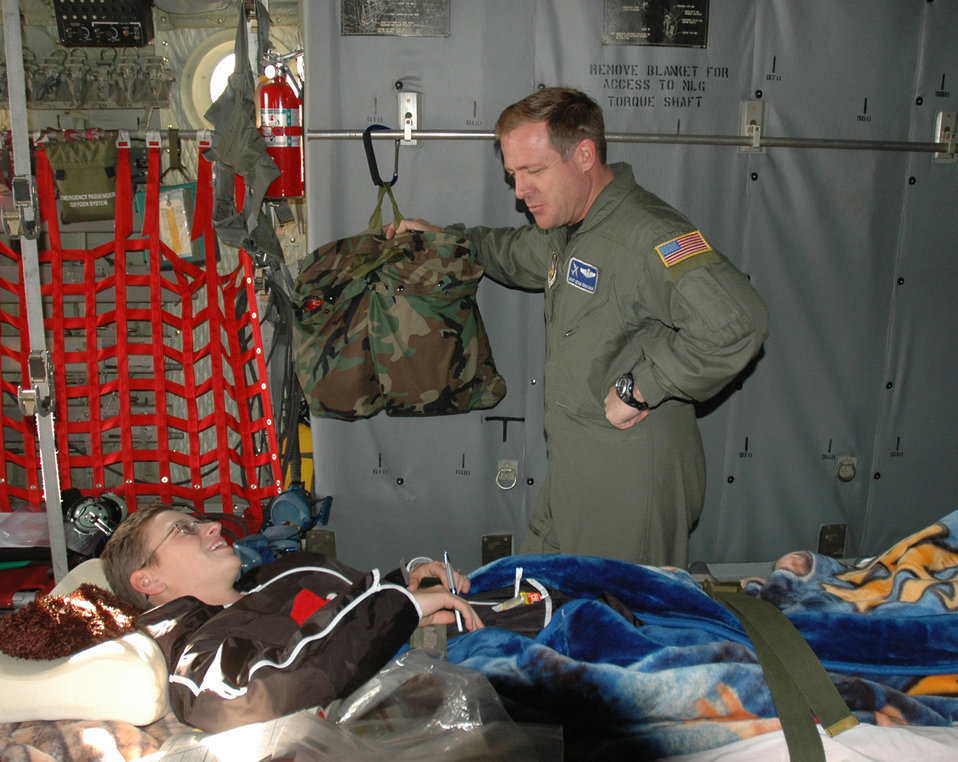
Volunteerism at heart of medical evacuation mission

Master Sgt. Kevin Brackin chats with Army Pvt. Amber Zeunen as she is transported home aboard a 908th Airlift Wing aircraft. Sergeant Brackin is a loadmaster with the 908th AW at Maxwell Air Force Base, Ala.